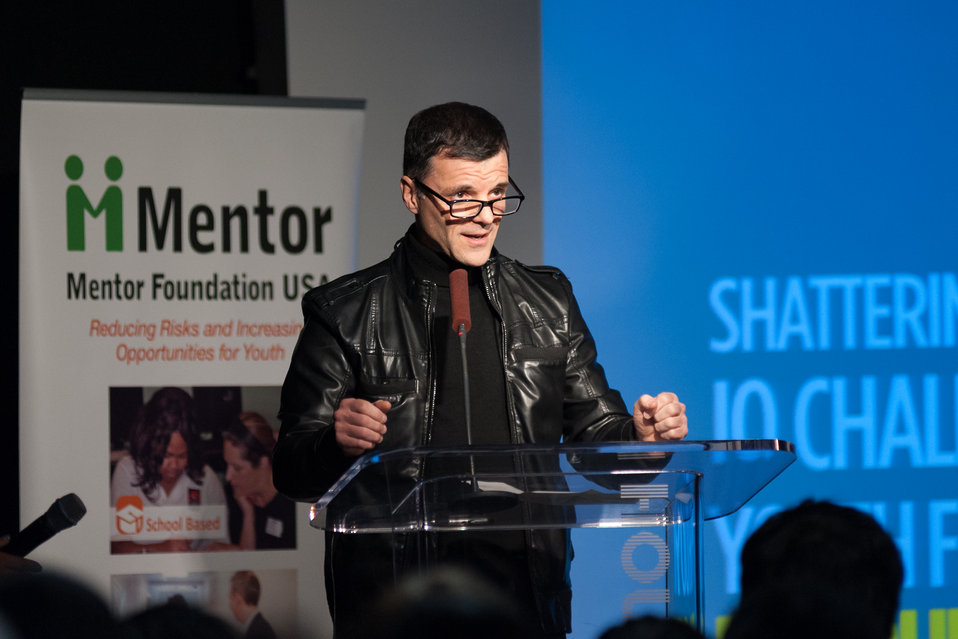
Mentor NDFW Event 2014

Mentor Foundation USA, in partnership with the National Institute on Drug Abuse (NIDA) and other key partners hosted a Youth Drug Facts Rally at the House of Sweden on Thursday, 30th January 2014. Approximately 200 students from five local high schools attended and had the opportunity to interact with top U.S. scientific experts, including Dr. Ruben Baler of NIDA and inspiring guest speakers to “shatter the myths” about drugs and substance abuse, while pledging to stay drug-free.